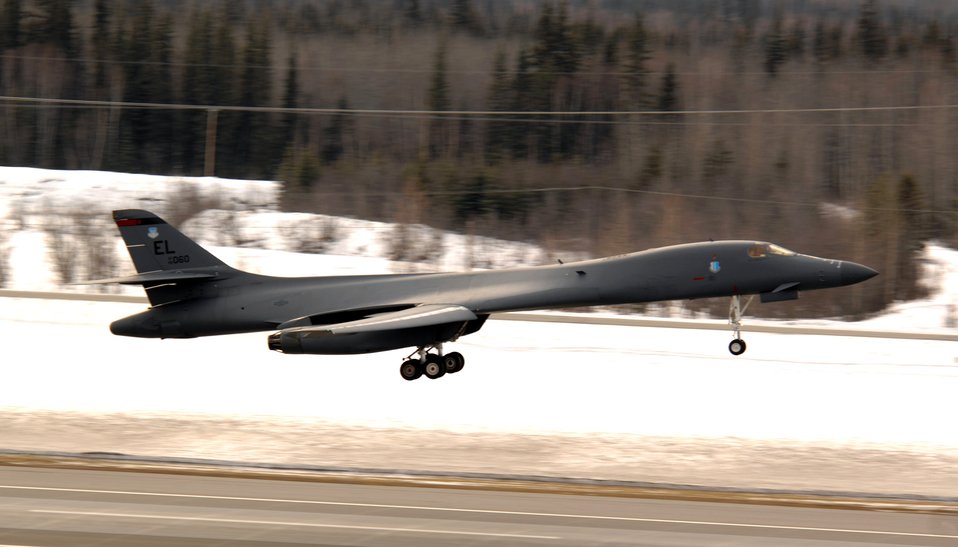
Red Flag-Alaska waves

A B-1B Lancer from Ellsworth Air Force Base, S.D., performs a touch and go before landing for Red Flag-Alaska 07-1 April 3 at Eielson AFB, Alaska. Red Flag-Alaska is a series of Pacific Air Forces commander-directed field training exercises for U.S. forces, which provides joint offensive counter-air, interdiction, close-air support, and large-force employment training in a simulated combat environment.